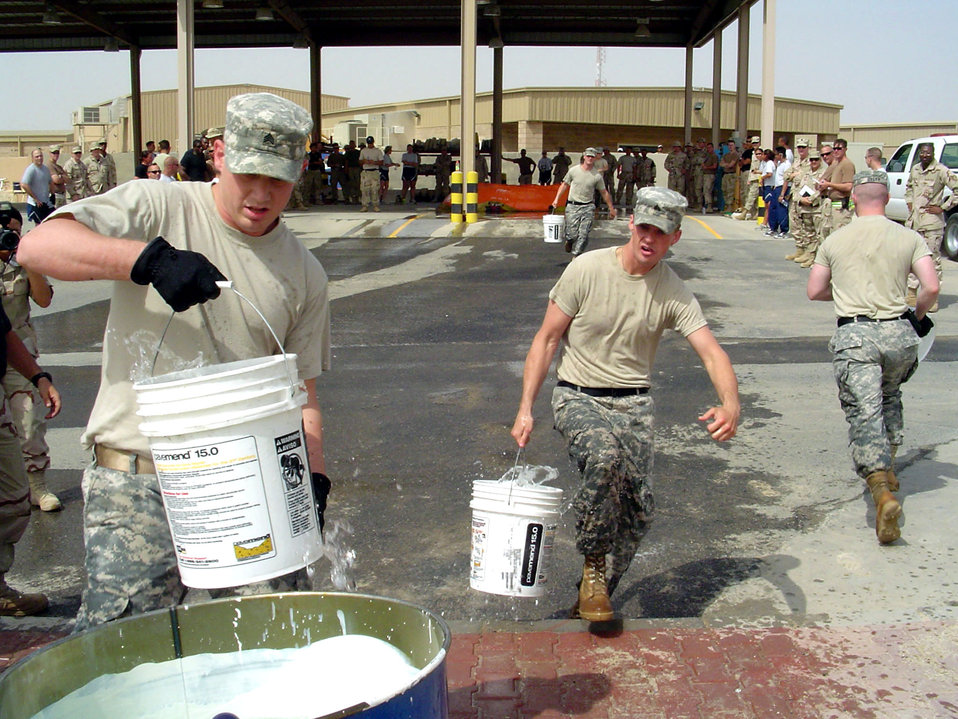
Firefighter Challenge

Soldiers from